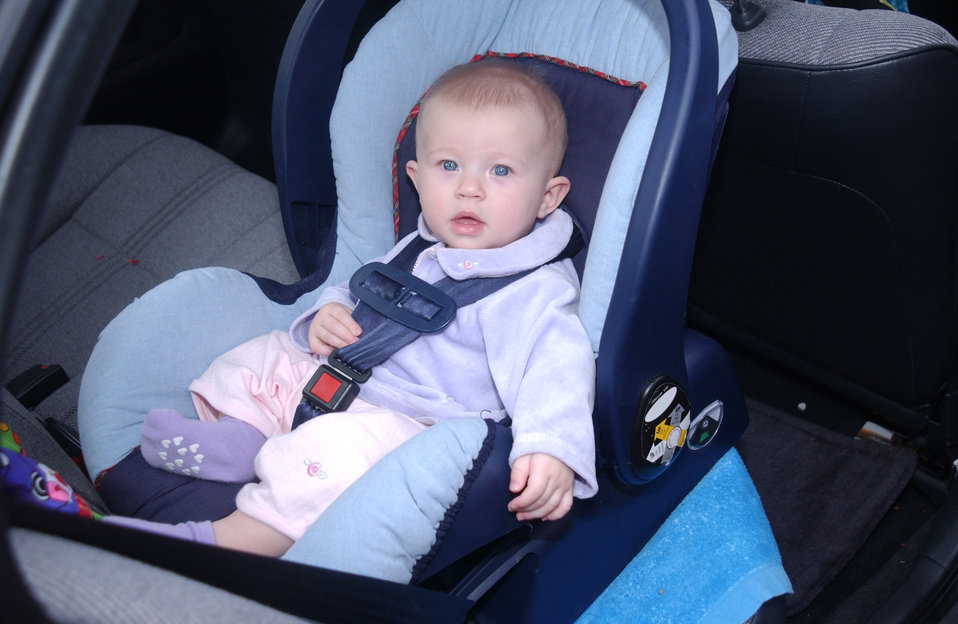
This 2004 photograph shows an infant who has been properly positioned, and buckled into a rear-facing car seat. For example, notice the harnesses are snug; the plastic harness clip is positioned at armpit level in order to hold the shoulder straps in place; the straps are lying flat; the baby is dressed in clothes that allow the strap to go between the legs; and the child is not slouching down, or to the side.